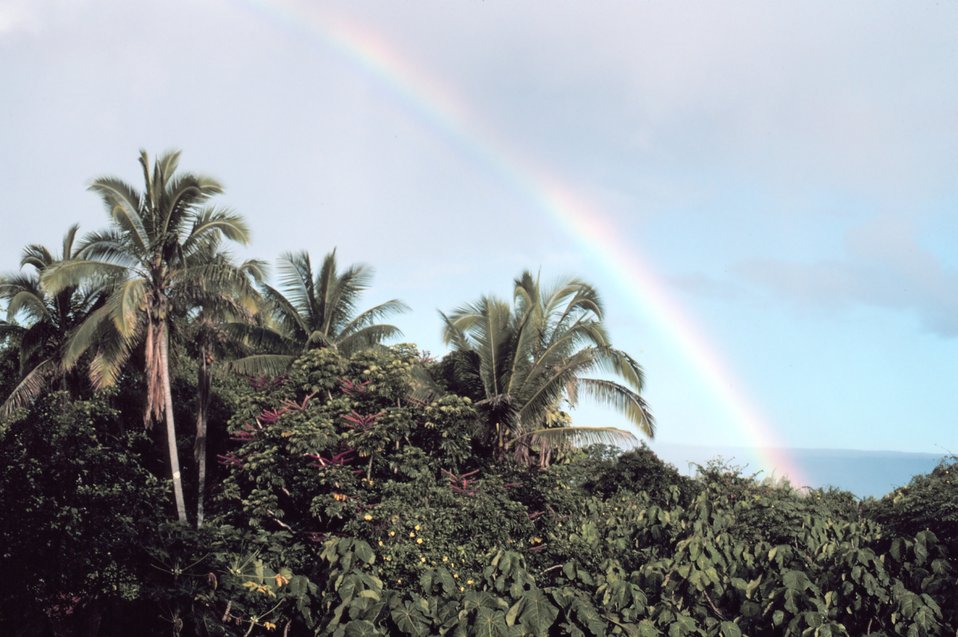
A Hawaiian rainbow from a Hilo apartment building